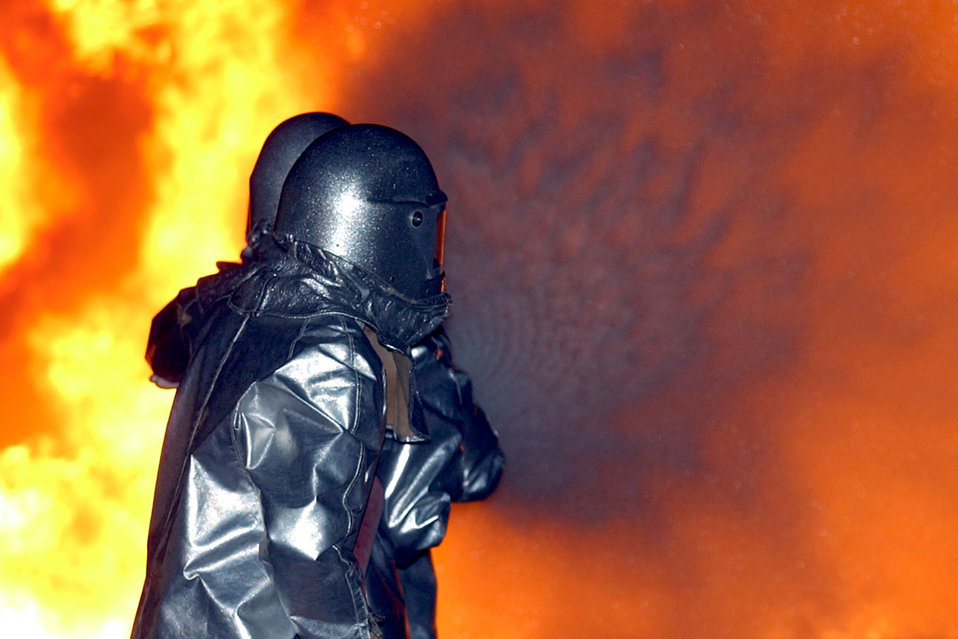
Blazing

OPERATION IRAQI FREEDOM -- Firefighters extinguish a fire during a training exercise at a forward-deployed location. Air Force firefighters provide a full range of fire and emergency services in peacetime and wartime.